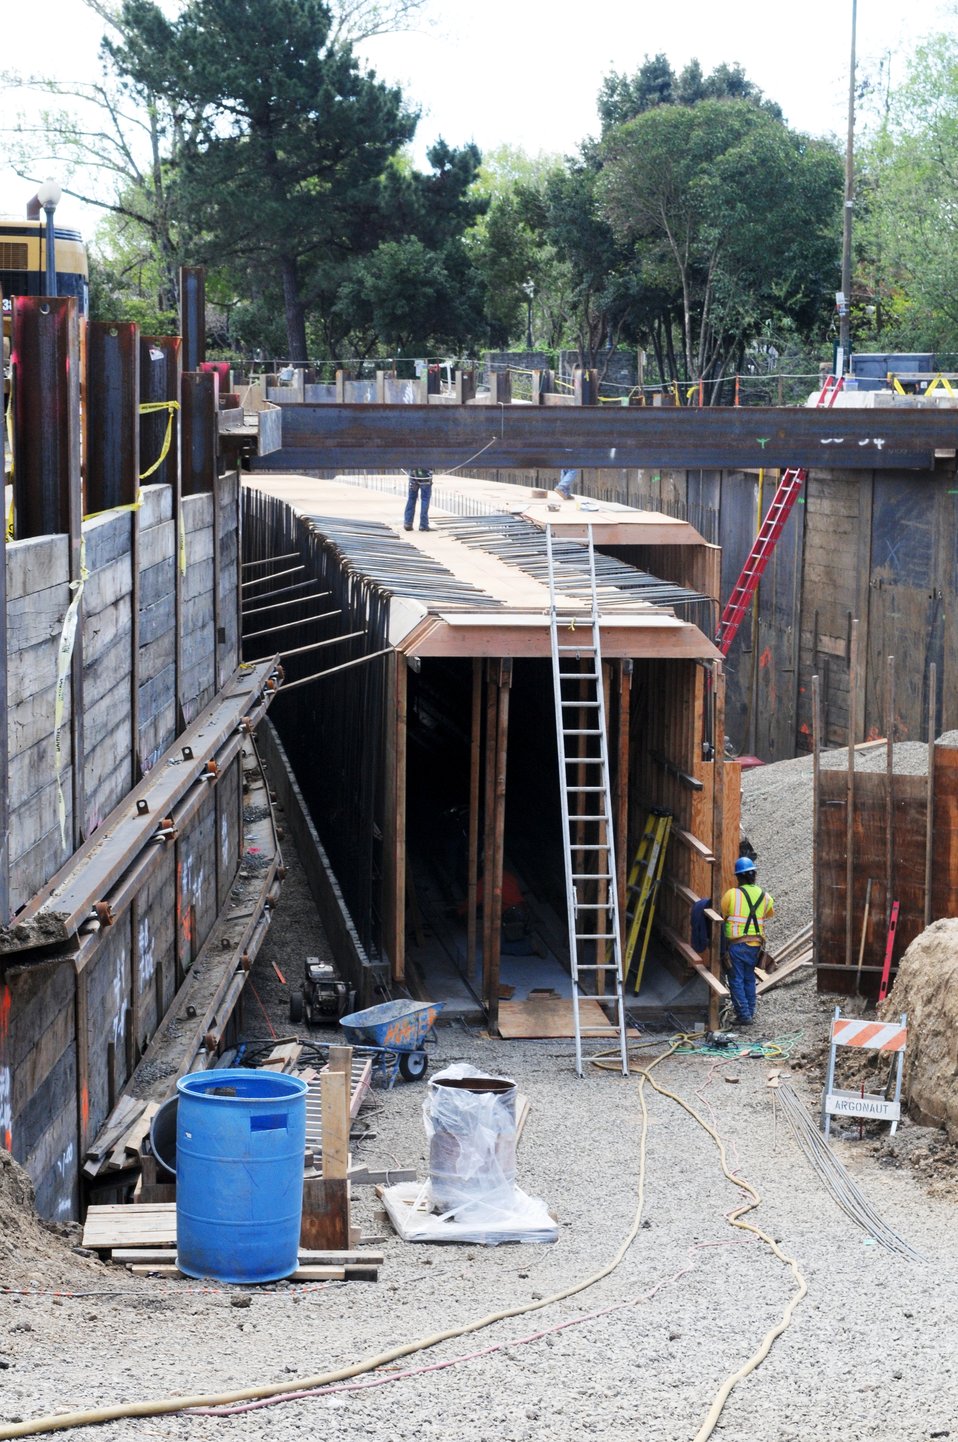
Reducing flood risk in Napa, Calif.

Construction continues on double-barrel box culverts April 8, 2011 in Napa, Calif. The U.S. Army Corps of Engineers Sacramento District is installing the culverts as part of a project to reduce the risk of flooding from nearby Napa Creek. ProVen Management is the contractor building the culverts.
“These box culverts will give the creek a straight shot out towards the river,” Corps project manager Dave Cook said. In high water, Napa Creek often overtops and spills into adjacent neighborhoods, causing persistent flooding. The culverts will direct flood waters more quickly to the river and away from homes and businesses. The $14.8 million project, funded by the American Recovery and Reinvestment Act of 2009, is a joint effort of the Corps, the city of Napa, and the Napa Flood Control and Water Conservation District, to reduce flood risk for the city.